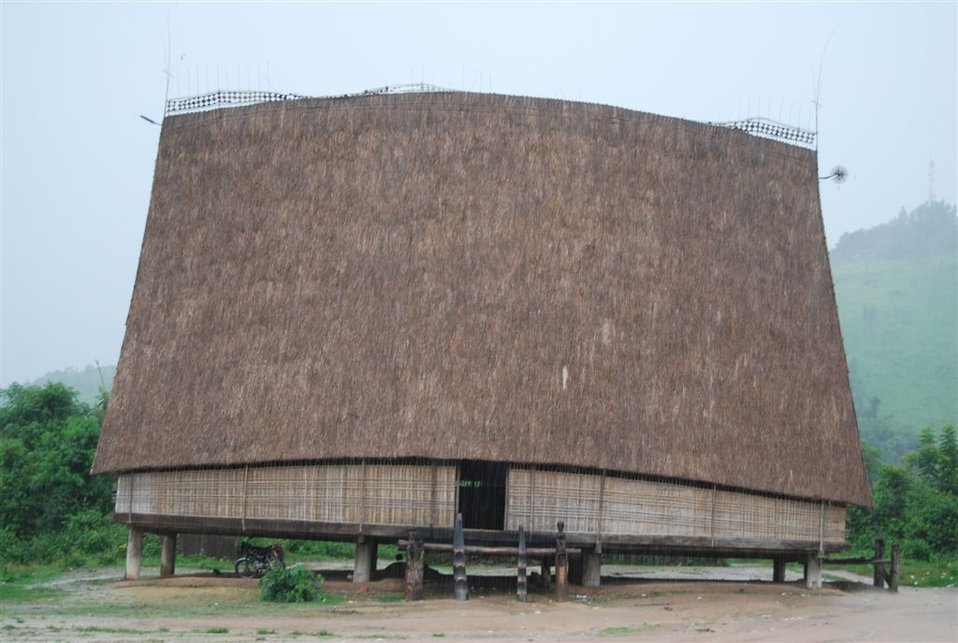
Traditional community center in Kon Tum